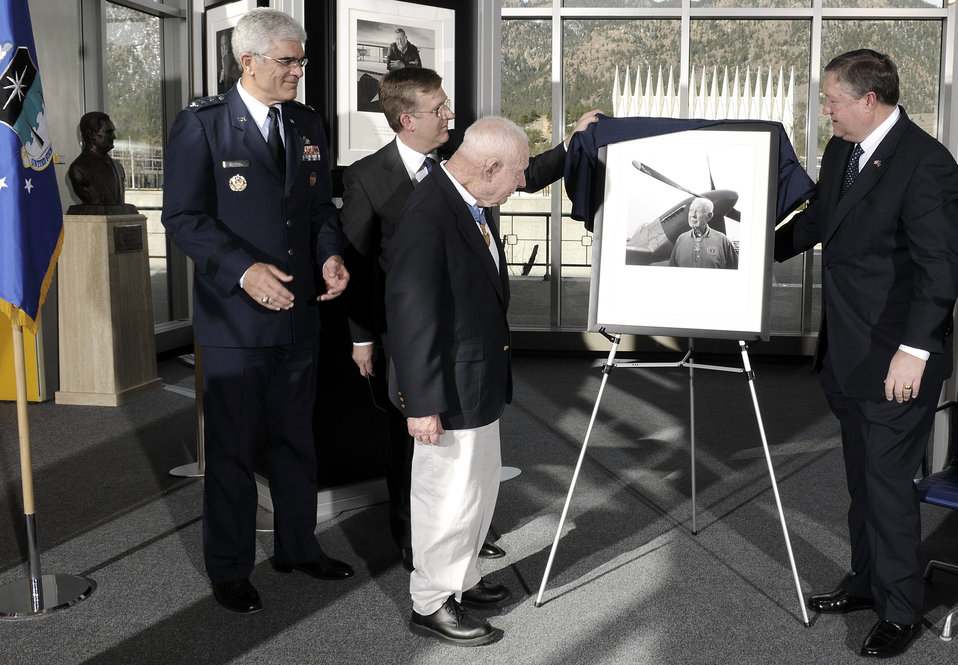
'Visions of Valor' portraits honor heroes

Secretary of the Air Force Michael B. Donley unveils a portrait of retired Col. Bernard Fisher during the